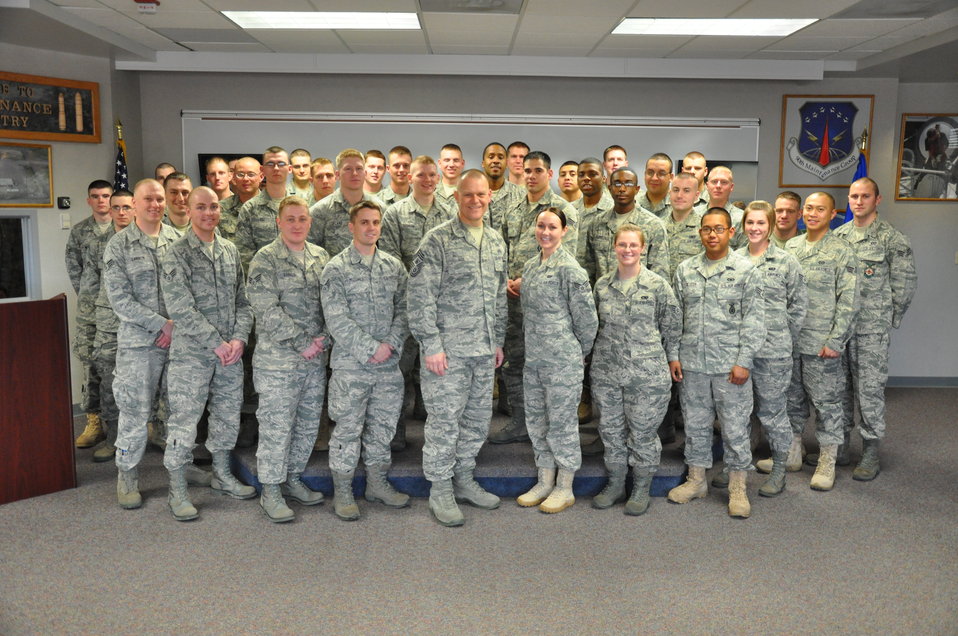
Chief Roy visits F.E. Warren Air Force Base

Chief Master Sgt. of the Air Force James Roy visits with Airmen attending the Airmen Leadership School and the First Term Airmen's Center March 2, 2011, at F.E. Warren Air Force Base, Wyo.